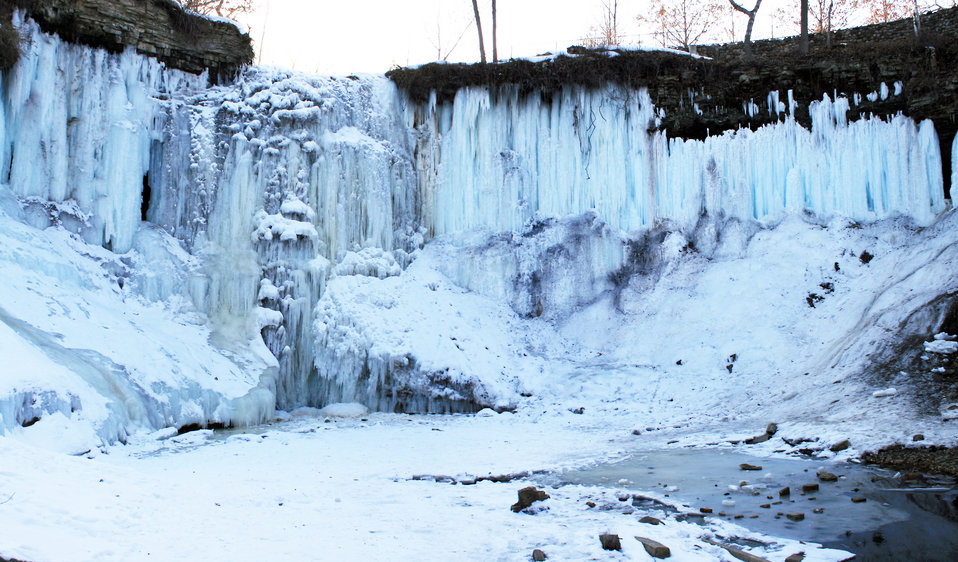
Minnehaha Falls